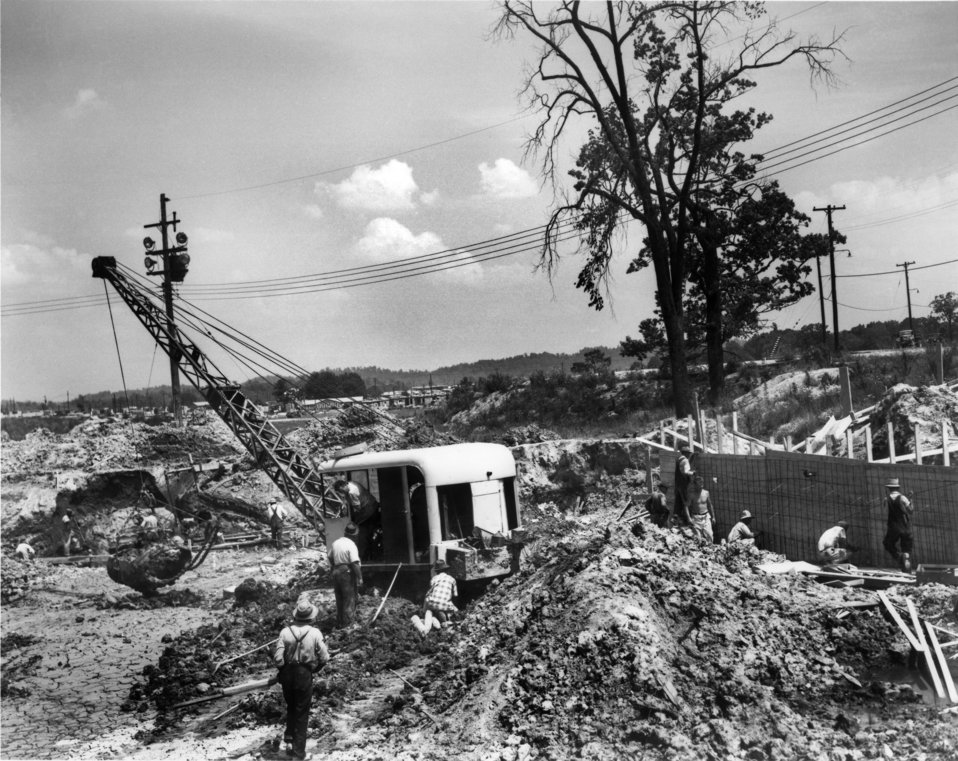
Swimming Pool Construction Grove Center Oak Ridge

Pro749-6 DOE photo Ed Westcott 6-28-1945 Oak Ridge Tennessee